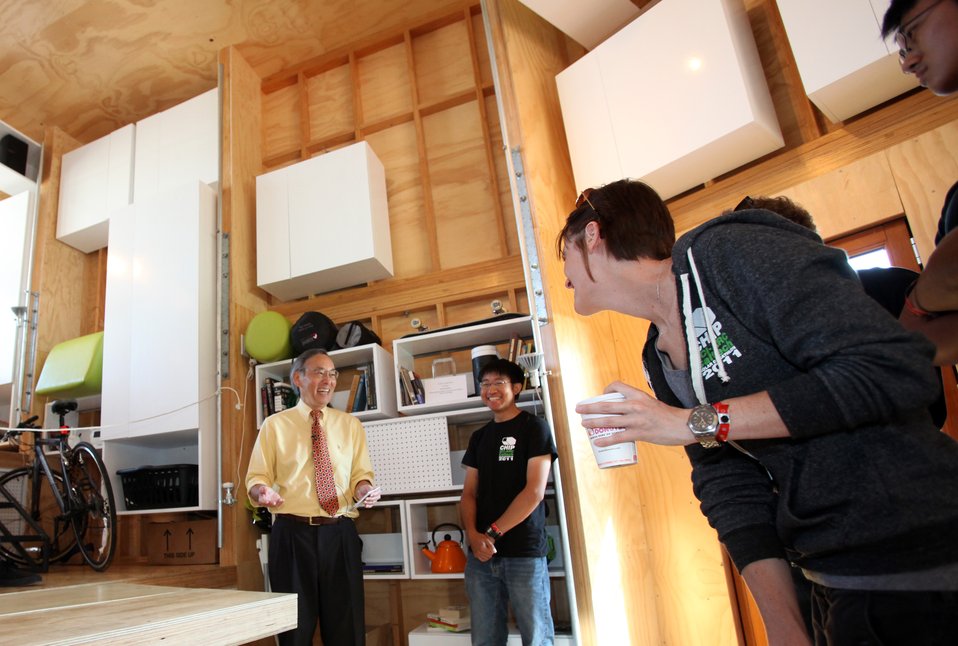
Energy Secretary Chu Visits SCI-Arc/Caltech's Solar Decathlon House

U.S. Energy Secretary Steven Chu, left, speaks with members of the SCI-Arc/Caltech team, Andrew Gong, second from left, and Elisabeth Neigert, right, as he tours their entry in the U.S. Department of Energy Solar Decathlon 2011 in Washington, D.C., Friday, Sept. 30, 2011.